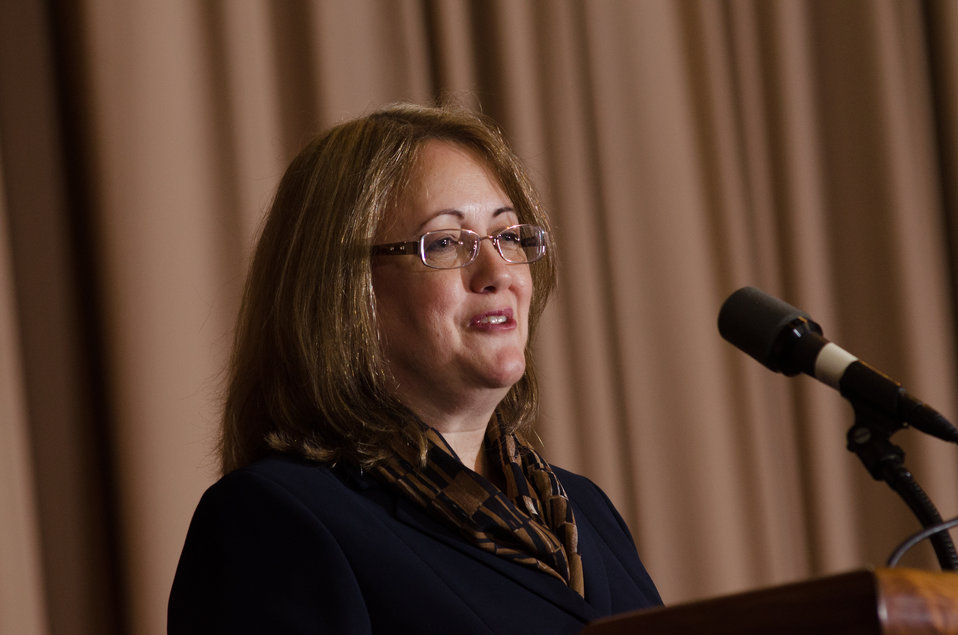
U.S. Department of Agriculture (USDA) Office of Human Resources Management, Employment Program Manager, Diversity and Inclusion Program Manager Jacqueline Padron provided the introduction of the 2013 National Hispanic Heritage Month ”Hispanics: Serving and Leading our Nation with Pride and Honor,” on Thursday, Sept. 19, 2013, in the Jefferson Auditorium, USDA Headquarters, Washington, D.C.